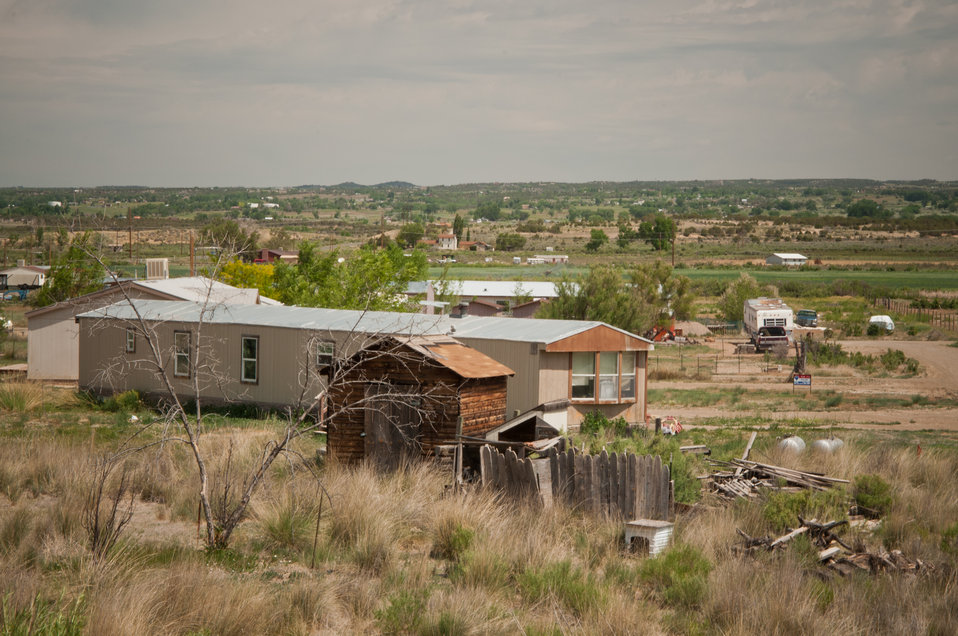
The U.S. Department of Agriculture (USDA) StrikeForce Initiative in cooperation with public and private organizations offers many economic grants, loans and conservation contracts through USDA's Rural Development (RD) and the Natural Resources of Conservation Service (NRCS) for areas of rural America with a high percentage of people living below the poverty level and considered economically distressed.